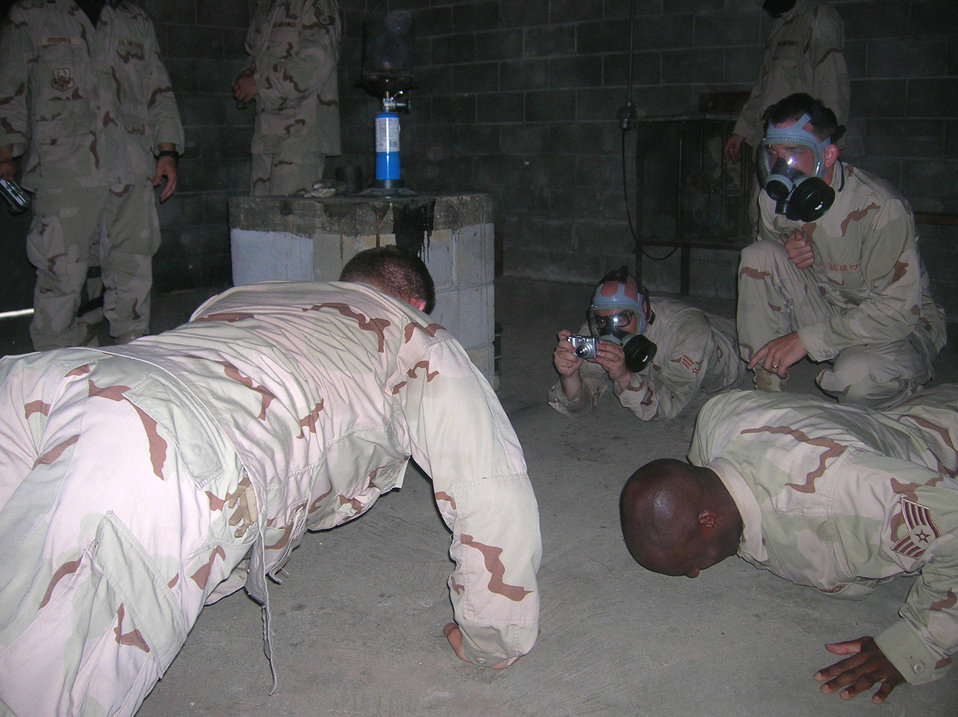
Air Force lieutenant breaks Army push-up record

Air Force 1st Lt. Stephen Maddox broke a long-standing Army record for the number of push-ups completed in a gas chamber without wearing a mask Aug. 30 when he managed 165 before emerging from the chamber.